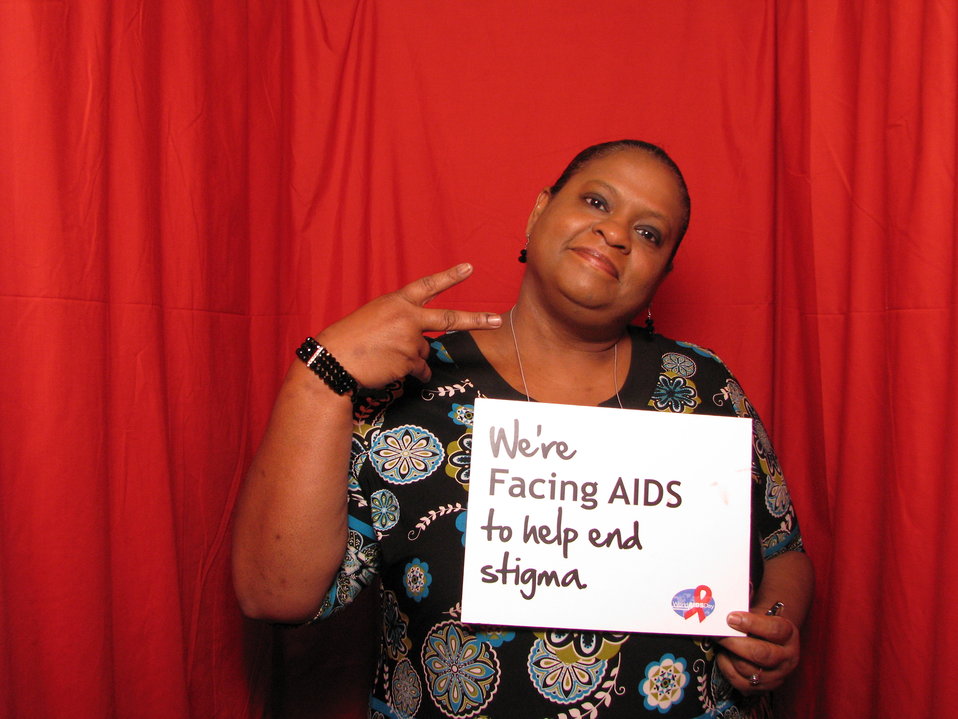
We're FACING AIDS to help end stigma.

From the AIDS.gov photo booth at the U.S. Conference on AIDS, September 2010 (Orlando, FL).